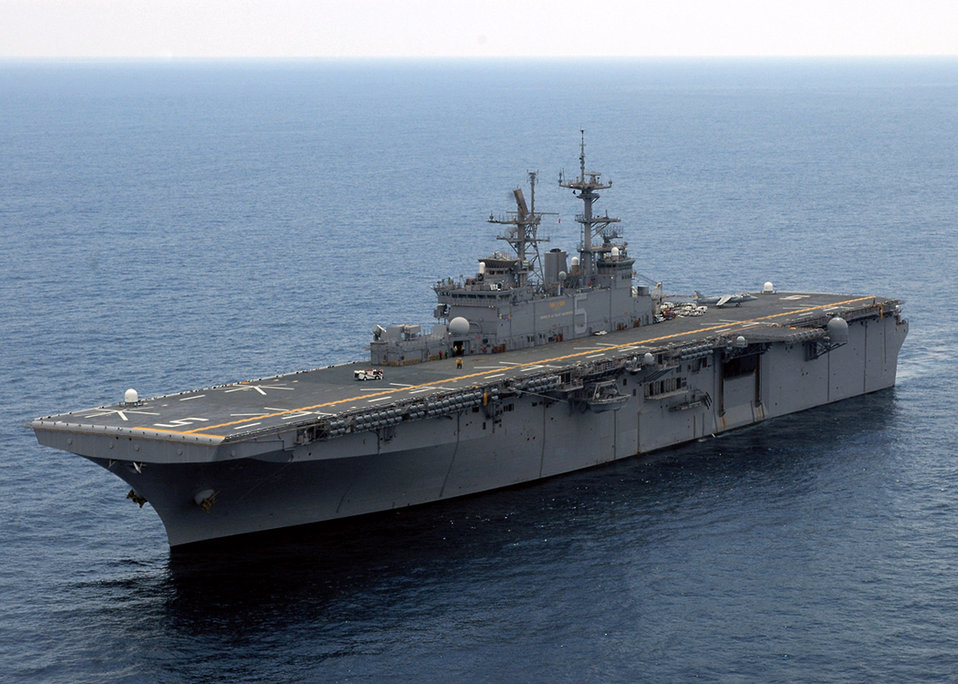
Jointness key to command afloat during JTFEX 08-4

The multipurpose amphibious assault ship USS Bataan (LHD 5) steams in the Atlantic Ocean. The Bataan is participating in Joint Task Force Exercise 08-4